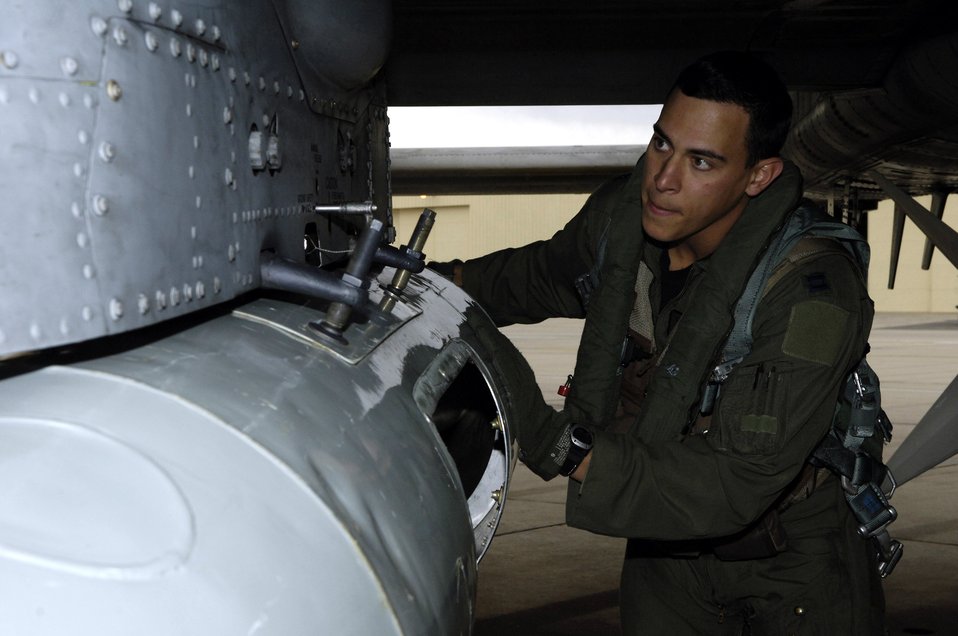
Taking an A-10 from pre-flight to flight

Capt. Andrew Tenenbaum performs a pre-flight inspection on his A-10 Thunderbolt II Oct. 29 prior to a mission. Captain Tenenbaum is a pilot in the 354th Fighter Squadron at Davis-Monthan Air Force Base, Ariz.